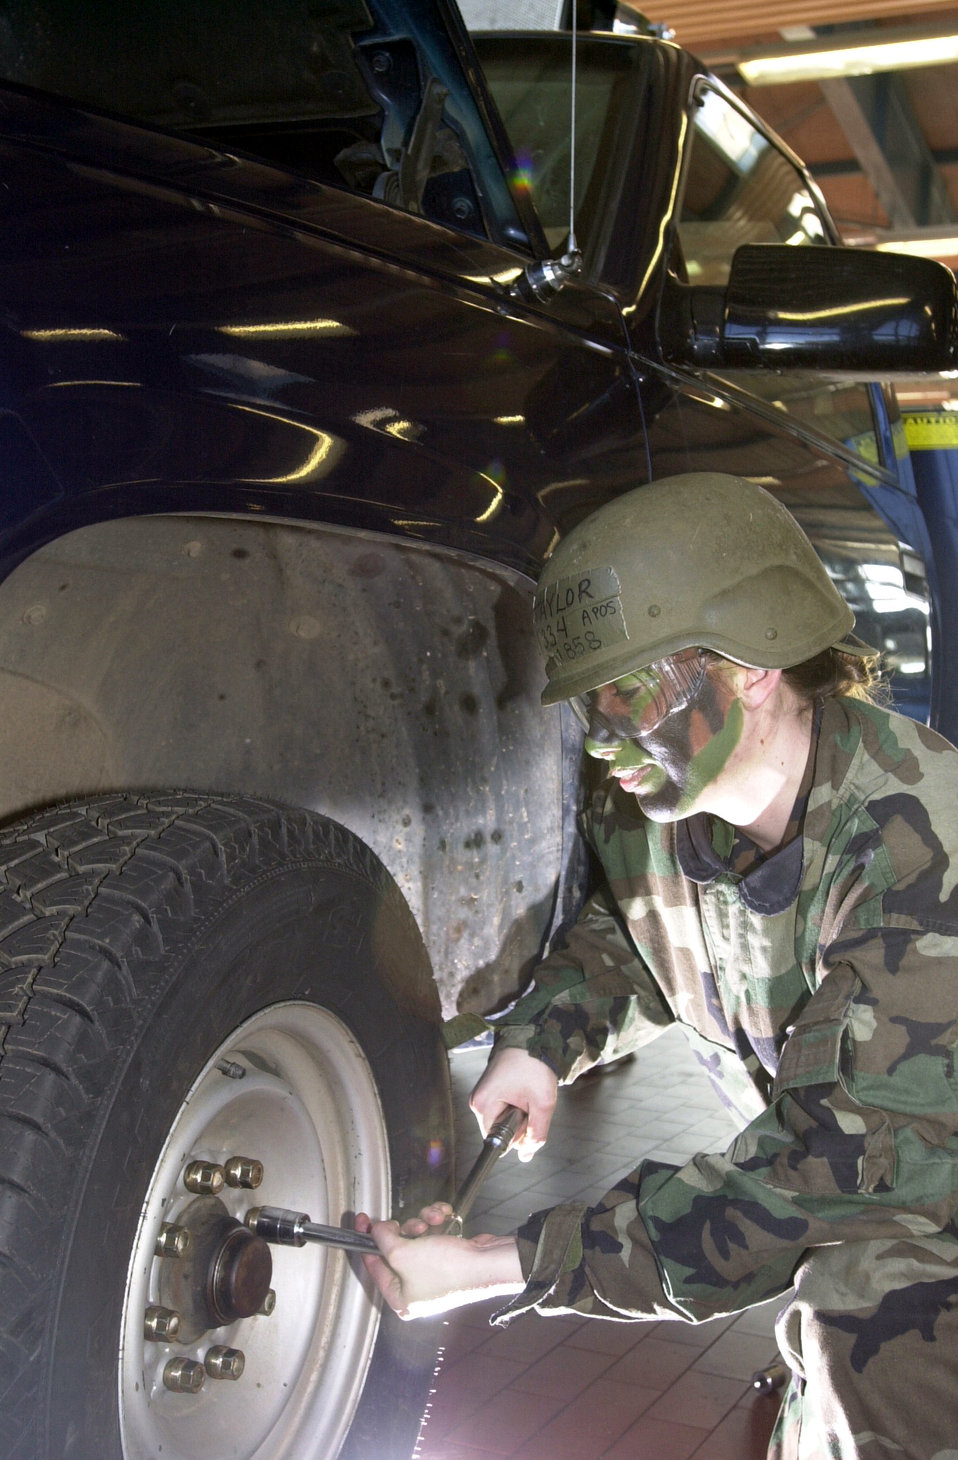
Fired up and Ready

SPANGDAHLEM AIR BASE, Germany -- Airman 1st Class Lori Taylor tightens lug nuts on a utility truck here Dec. 18. Airman Taylor is a general-purpose vehicle mechanic with the 52nd Logistics Readiness Squadron here.